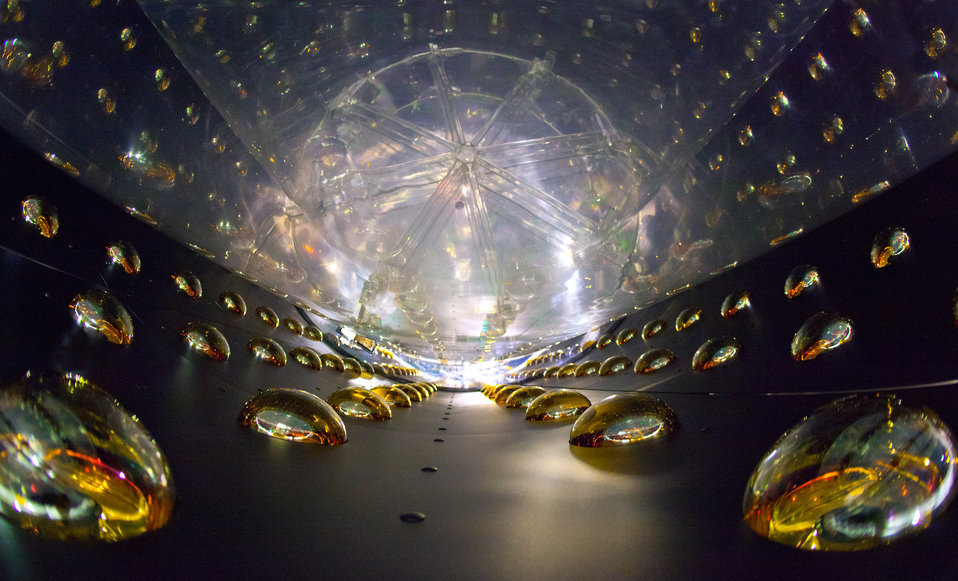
The Daya Bay Antineutrino Detector

While they might look like drops of water or soap bubbles, these colorful figures are actually photomultiplier tubes that line the walls of the Daya Bay neutrino detector. Neutrinos and antineutrinos are neutral particles produced in nuclear beta decay when neutrons turn into protons. This experiment aims to measure the final unknown mixing angle that describes how neutrinos oscillate. The tubes are designed to amplify and record the faint flashes of light that signify an antineutrino interaction. Lawrence Berkeley and Brookhaven National Labs and a number of physicists at U.S. universities played leading roles in the Daya Bay experiment, from designing the detectors all the way through to analyzing the data gathered. | Photo by Roy Kaltschmidt, LBNL.

Photo of the Week: September 7, 2012